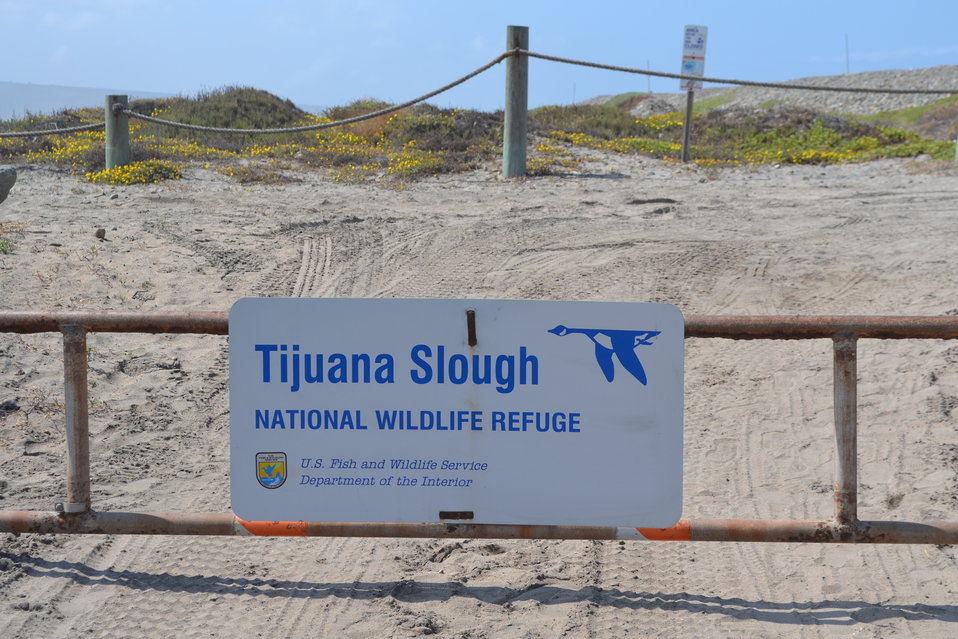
Front gate entrance to the beach and dune habitat on TJNWR

Every day, this gate is opened at sunrise and closed at sunset by the City of Imperial Beach Lifeguards who help patrol the beach, along with US Border Patrol and the US Fish & Wildlife Service staff.